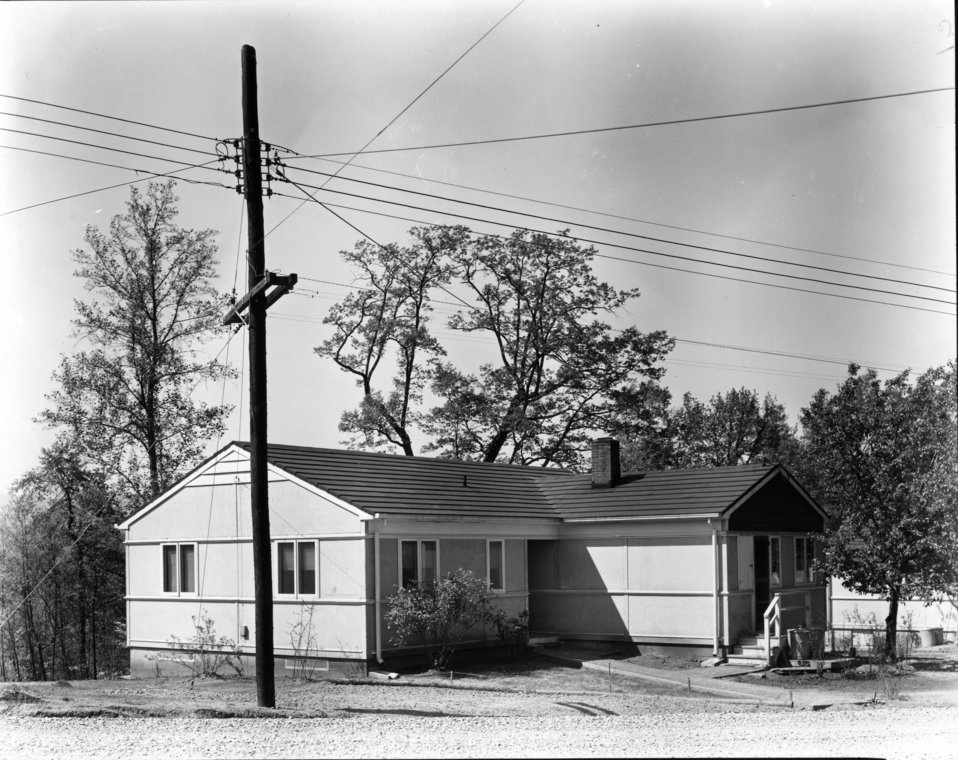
Housing at Oak Ridge